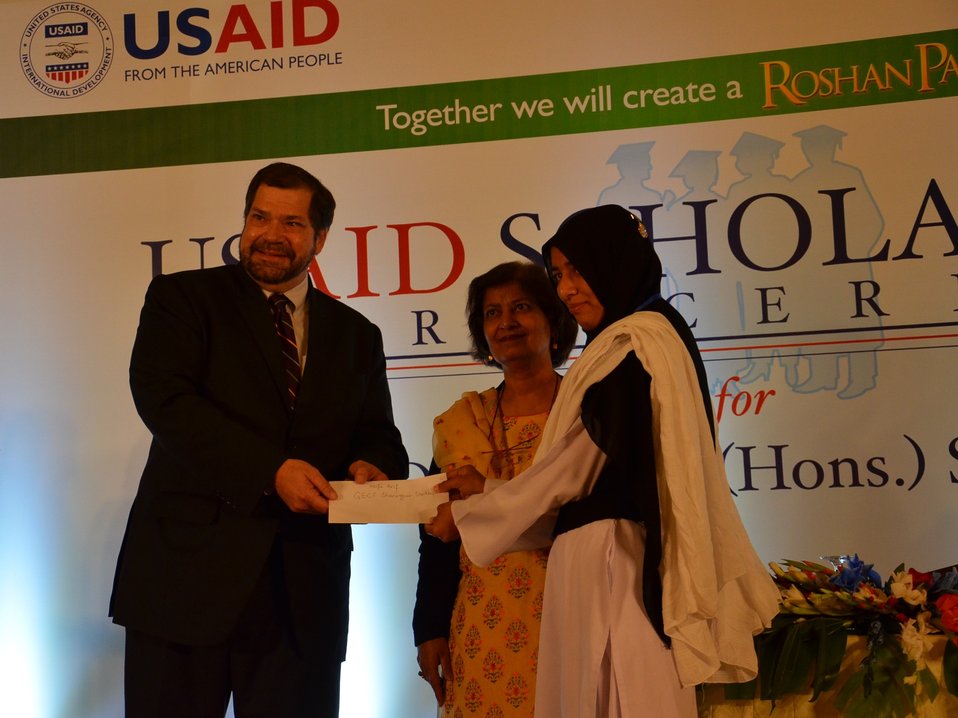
Mr. Bekken awarding scholarship